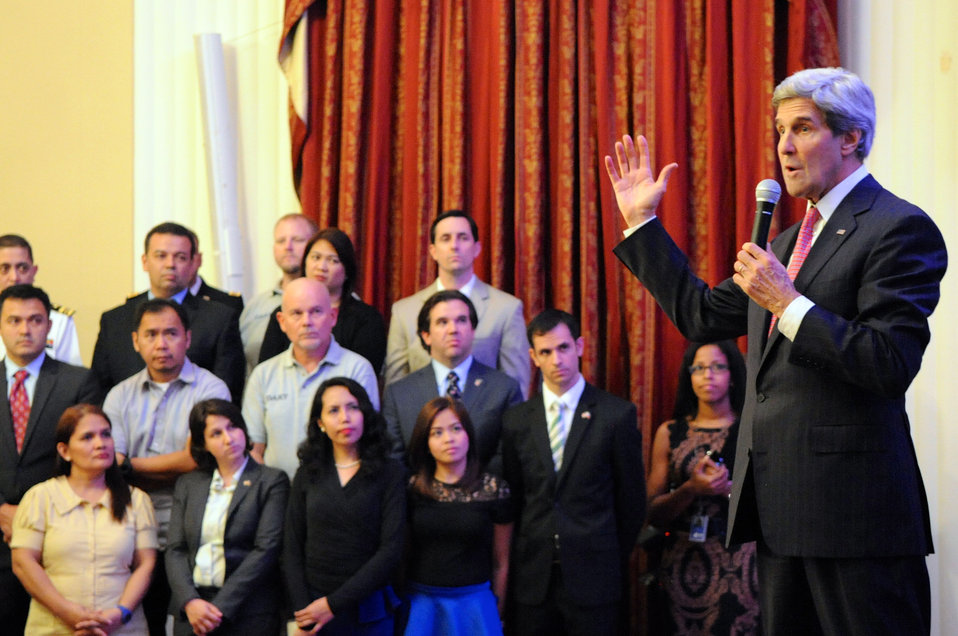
Secretary Kerry Thanks Typhoon Haiyan Helpers From Embassy Manila

U.S. Secretary of State John Kerry, backed by staff from the U.S. Embassy in Manila who helped in the aftermath of Typhoon Haiyan, lauded their efforts as he addressed the staff on December 17, 2013.